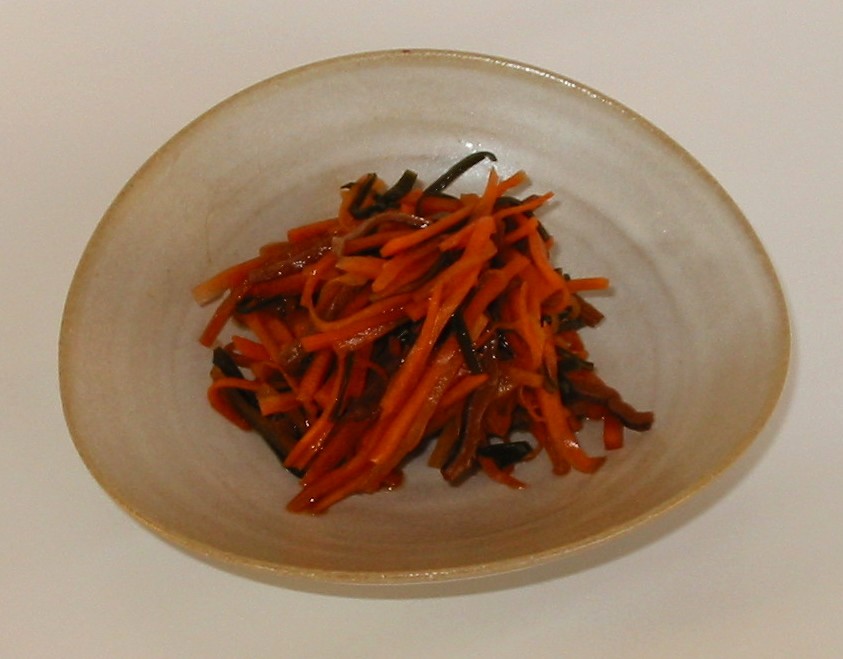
Ika-ninjin:a pickled dish native to Fukushima pref of Japan.